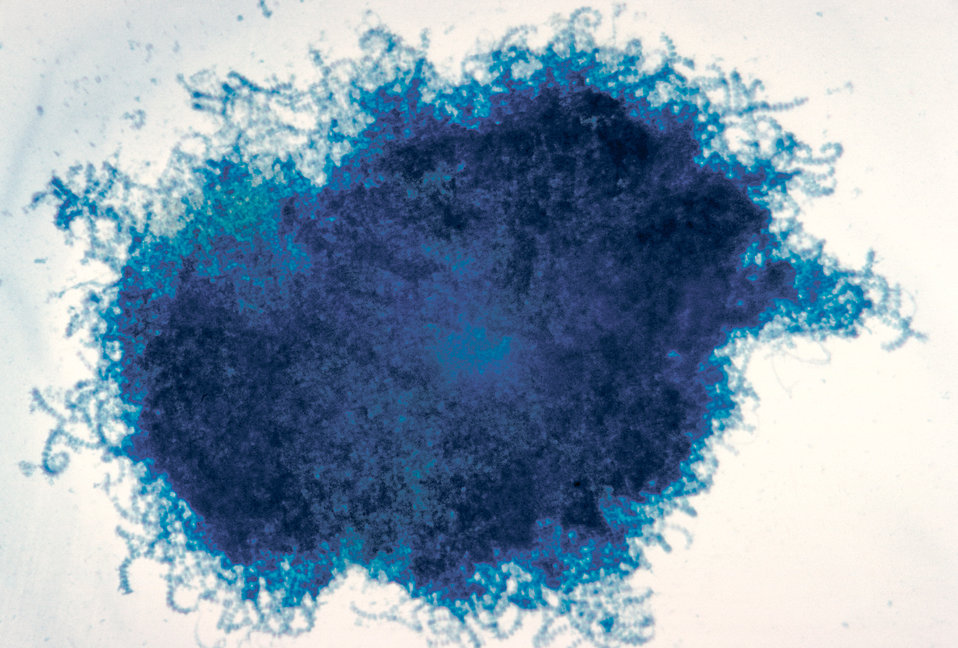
This image shows a cleistothecium of the fungus Arthroderma curreyi.